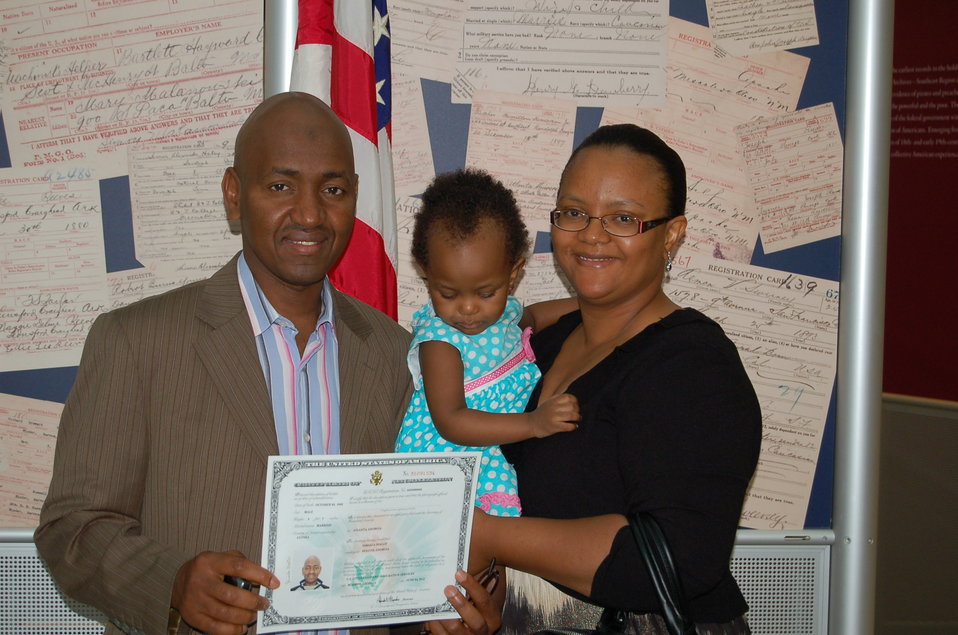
New Citizens